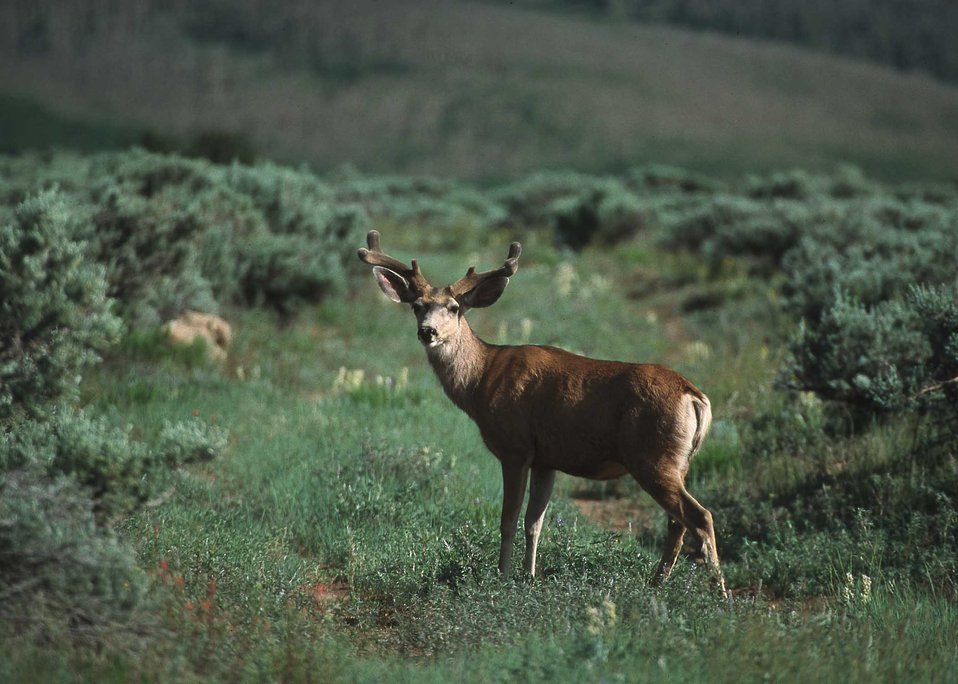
Mule Deer in velvet on FT Ranch.